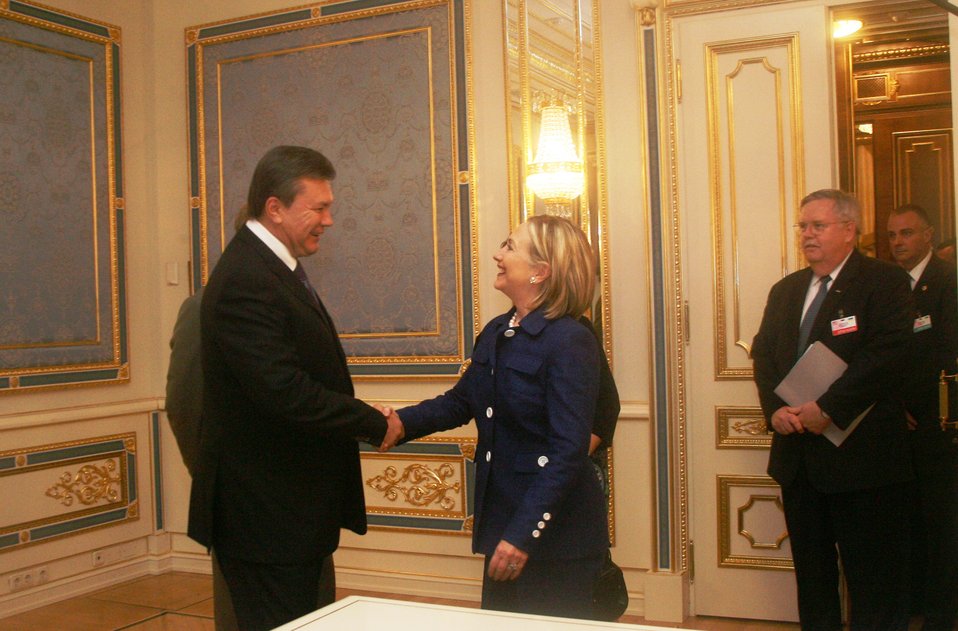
Secretary Clinton Meets With Ukrainian President

U.S. Secretary of State Hillary Rodham Clinton is greeted by Ukrainian President Viktor Yanukovych in Kyiv, Ukraine, on July 2, 2010.